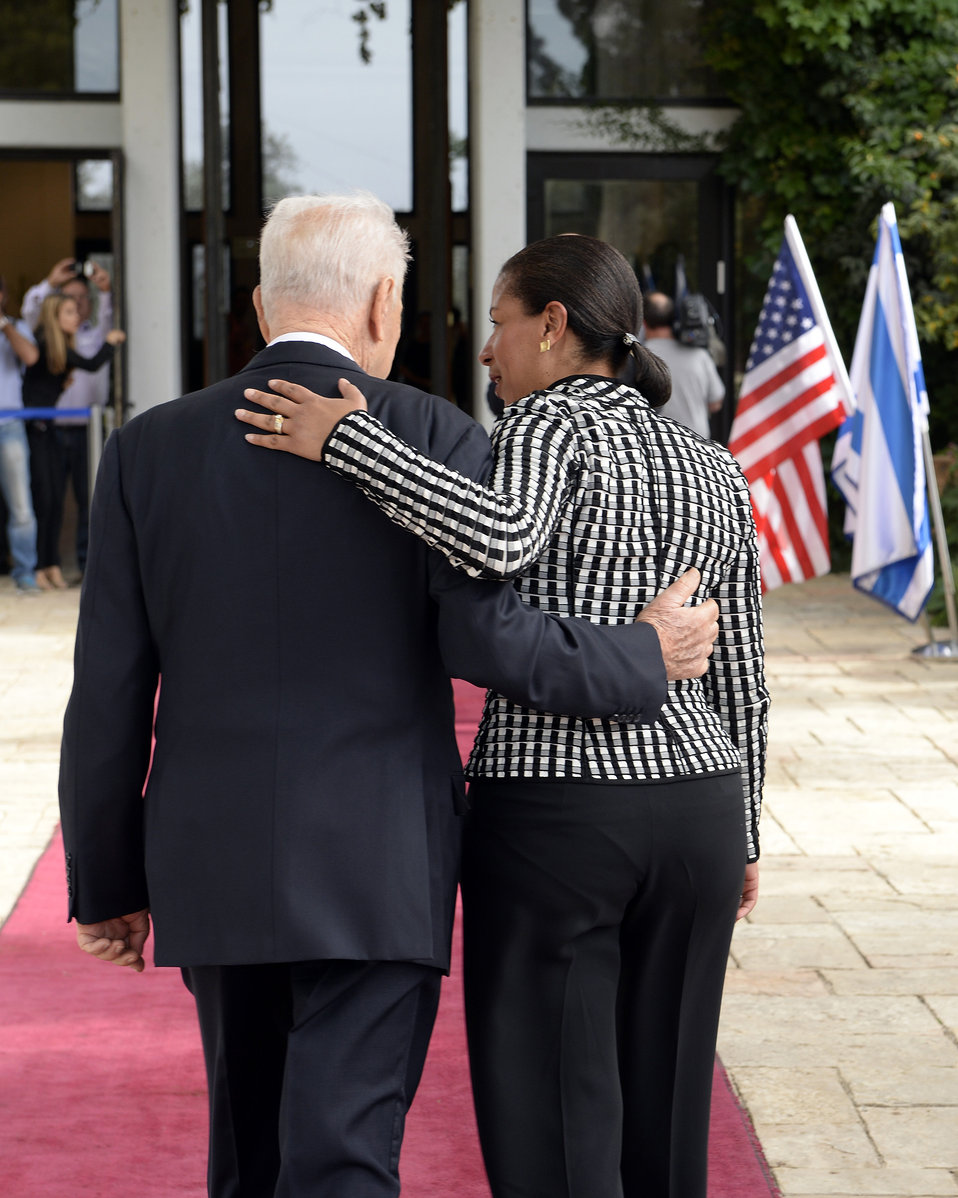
Israeli President Peres Welcomes Ambassador Rice

Israeli President Shimon Peres welcomes Ambassador Susan Rice, the President’s National Security Advisor, before their meeting in Jerusalem on May 7, 2014.